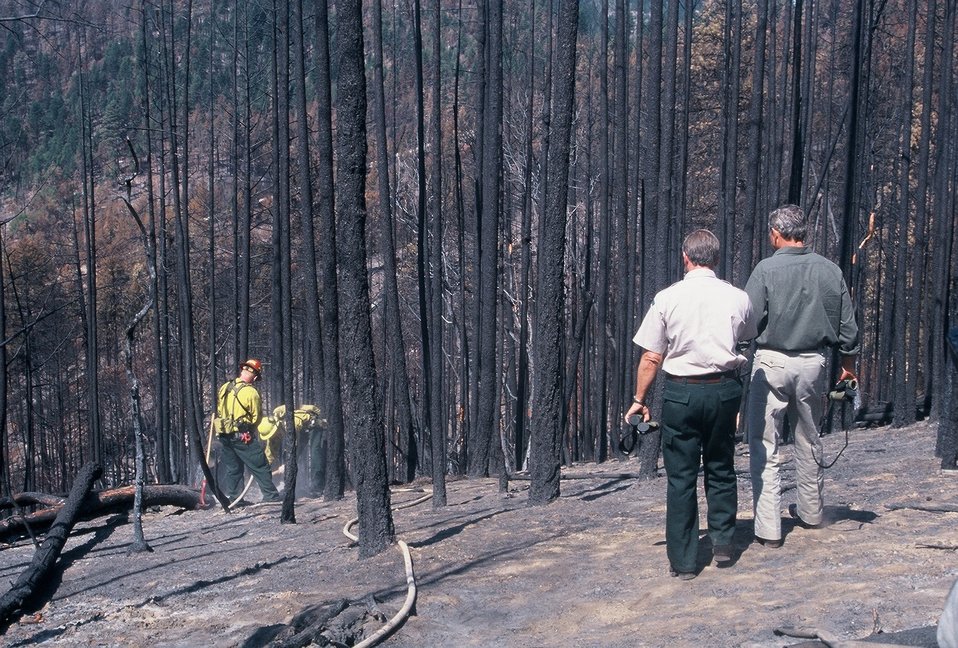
Ron Wenker, Medford District Manager and President Bush watch two firefighters extinguish a hotspot at the Squires fire location, August 22, 2002.